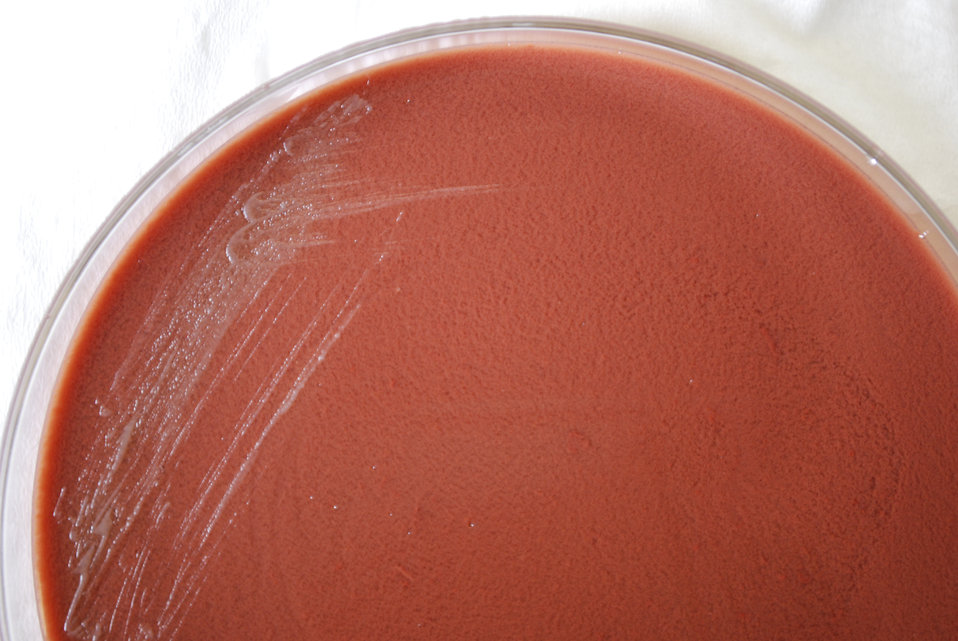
An enlarged view of PHIL 12214, this photograph depicts the colonial morphology displayed by Gram-negative Yersinia pestis bacteria, which was grown on a medium of chocolate agar, for a 24 hour time period, at a temperature of 25�C.